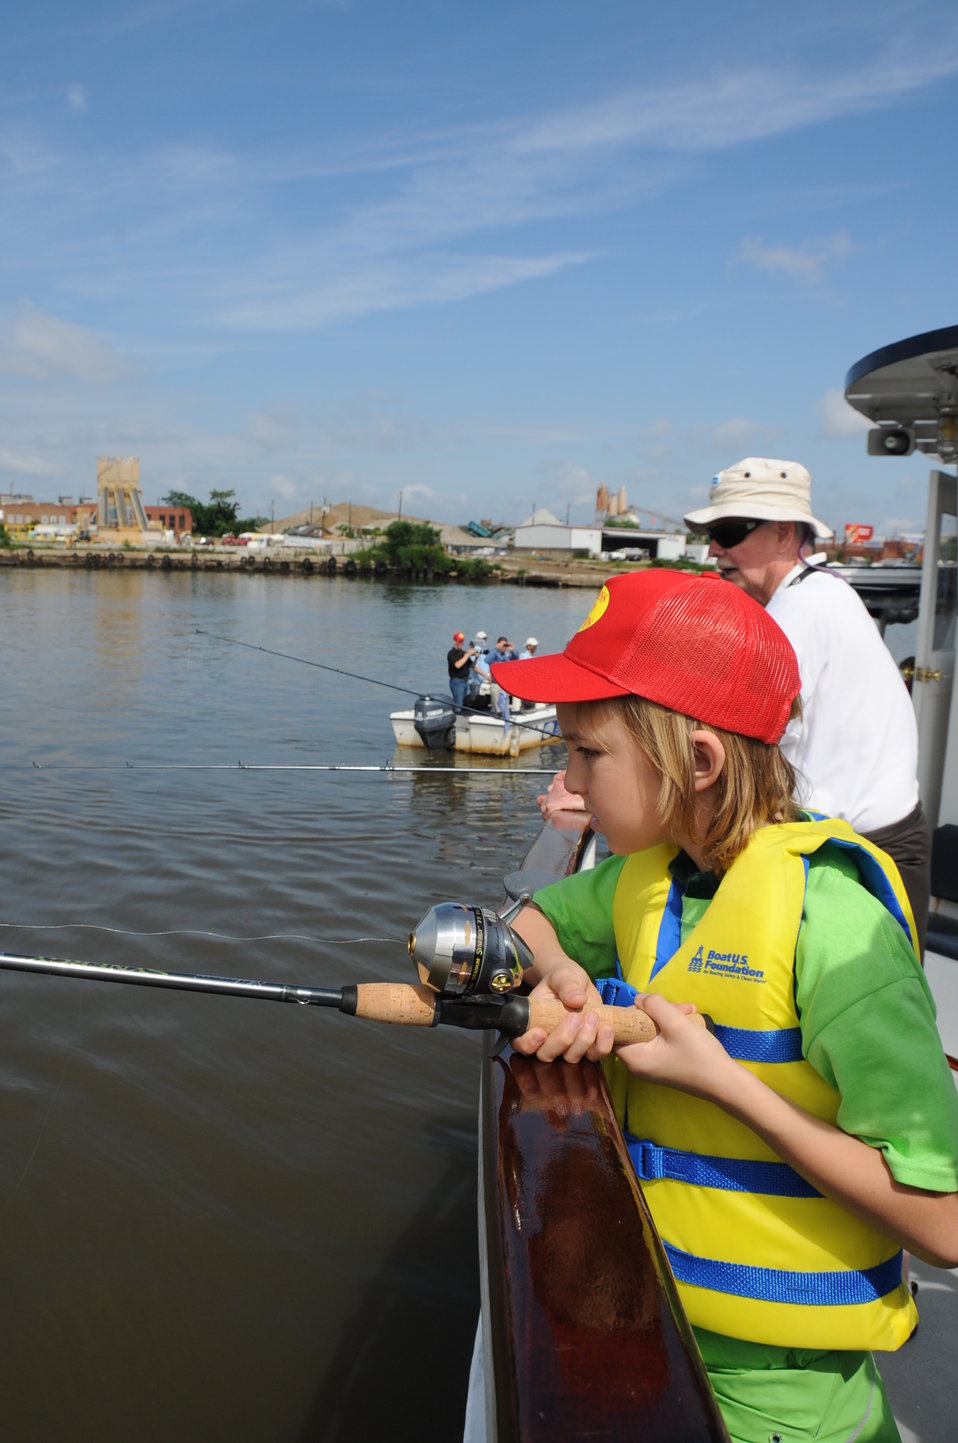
2013 National Fishing and Boating Week

Local students prepare to enjoy fishing at the annual kick-off of National Fishing and Boating Week on the Anacostia River in Washington D.C.